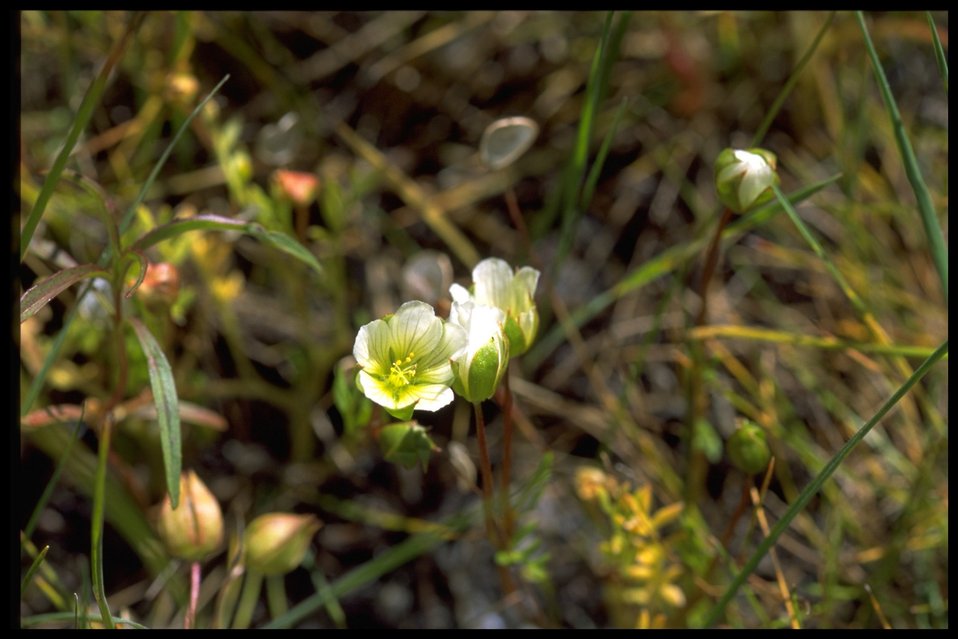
Medium shot of wildflower (genus Limnanthes).